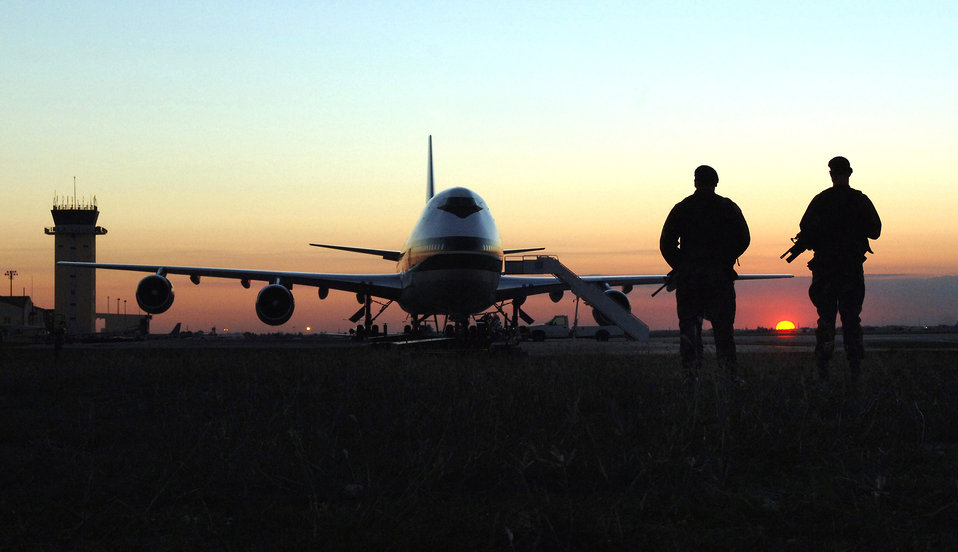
Runway patrol

Two security forces Airmen patrol the runway, Nov 15 at Incirlik Air Base, Turkey,.